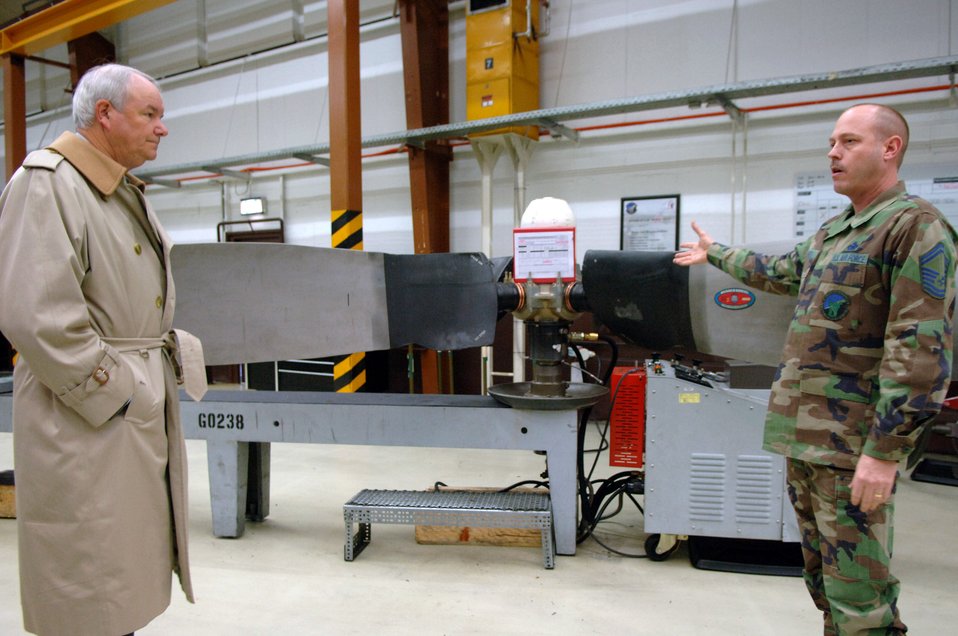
USAFE hosts AFSO 21 process council

Senior Master Sgt. Phillip Arnts (right) briefs Secretary of the Air Force Michael W. Wynne (left) on the new process to repair C-130 Hercules propellers Dec. 11 at Ramstein Air Base, Germany. The new cellular flow design was implemented as part of the Air Force Smart Operations for the 21st century program. Sergeant Arnts is assigned to the 86th Maintenance Squadron.